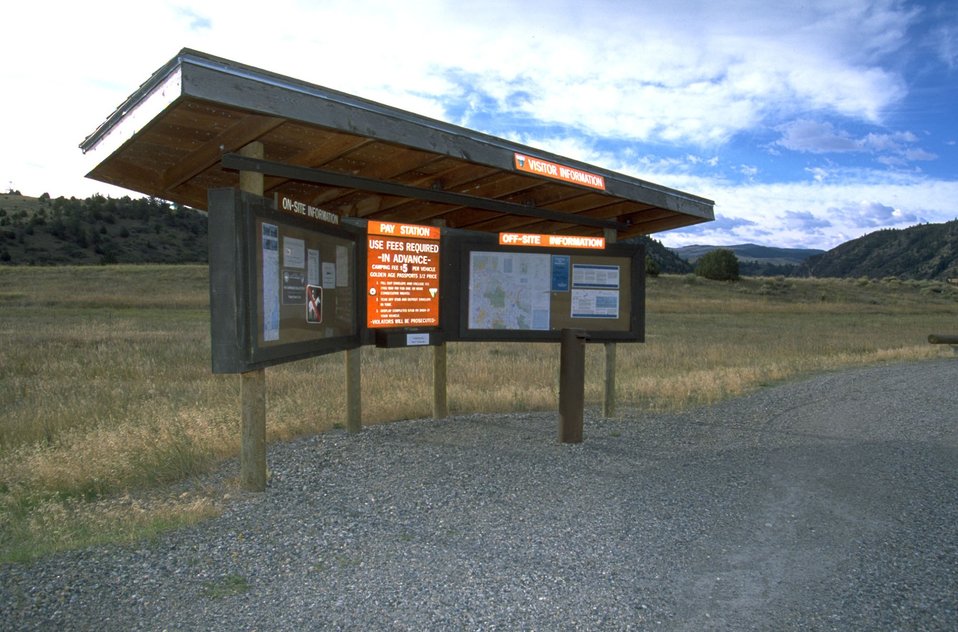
Kiosk at Red Mountain Campground